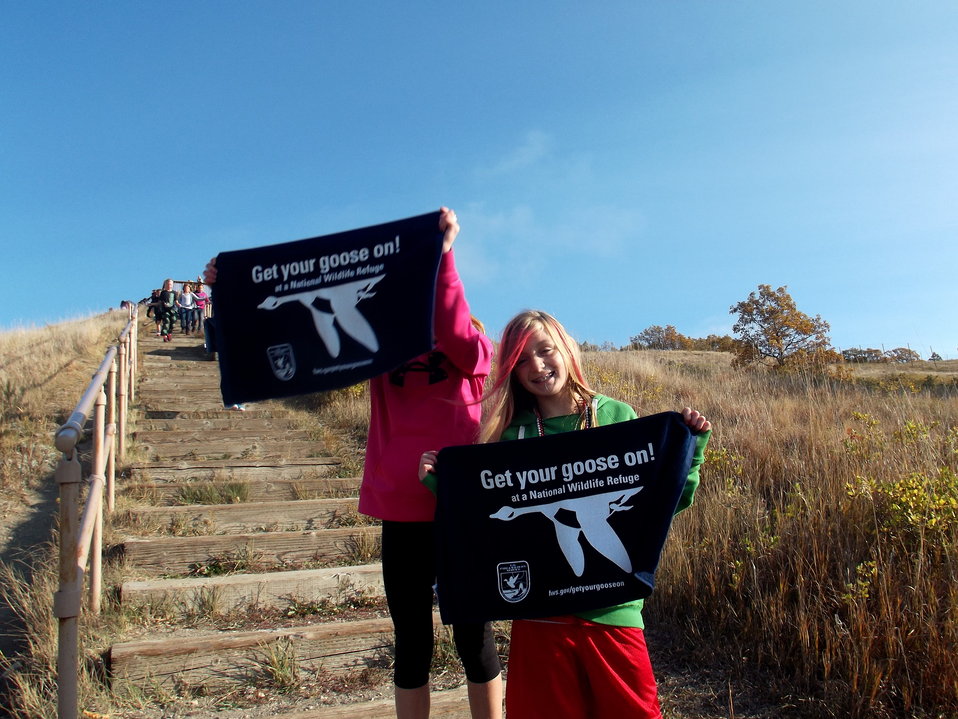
Get Your Goose On!

Photo taken at Sullys Hill National Game Preserve.